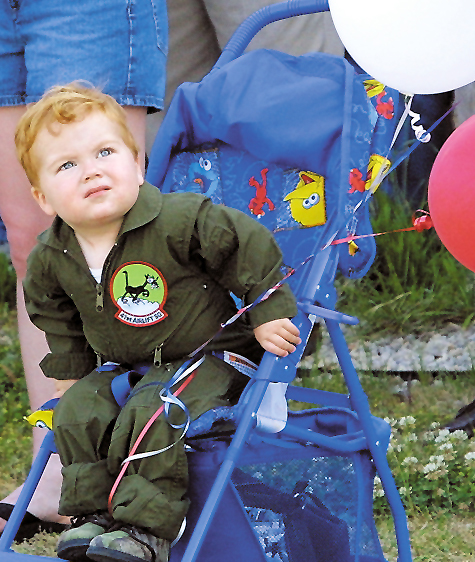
Happy homecoming

POPE AIR FORCE BASE, N.C. -- Dressed in a miniature flightsuit, 1-year-old Ryan Darragh keeps an eye on the sky as he waits for his father to return from Southwest Asia. Capt. Sean Darragh and more than 70 other Airmen returned after a three-month deployment.